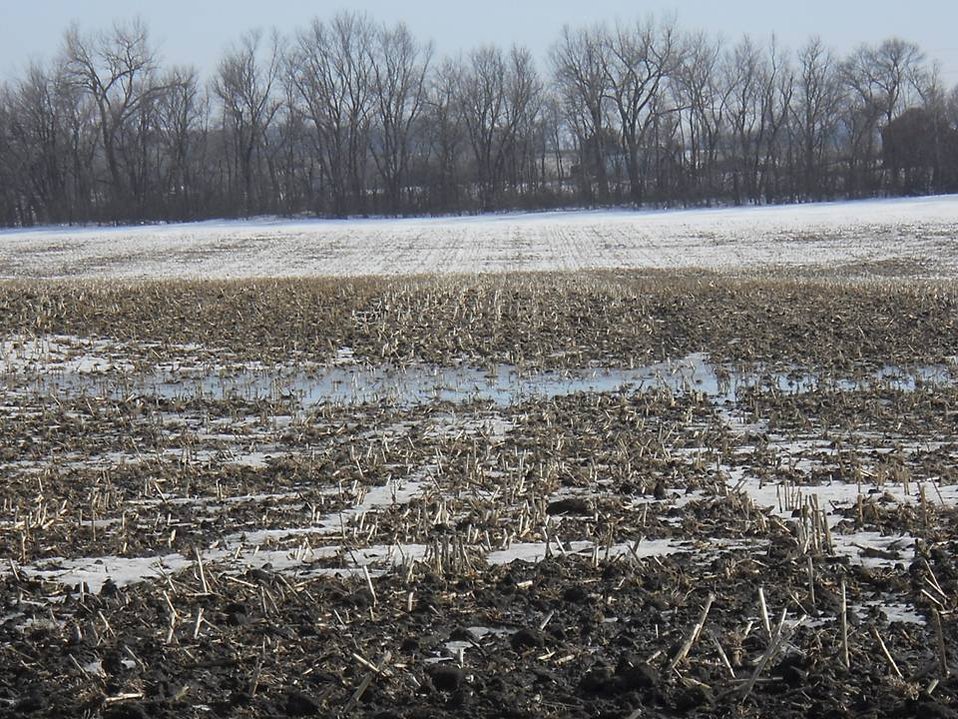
Farmed wetland

Utilized by waterfowl and shorebirds in the spring.